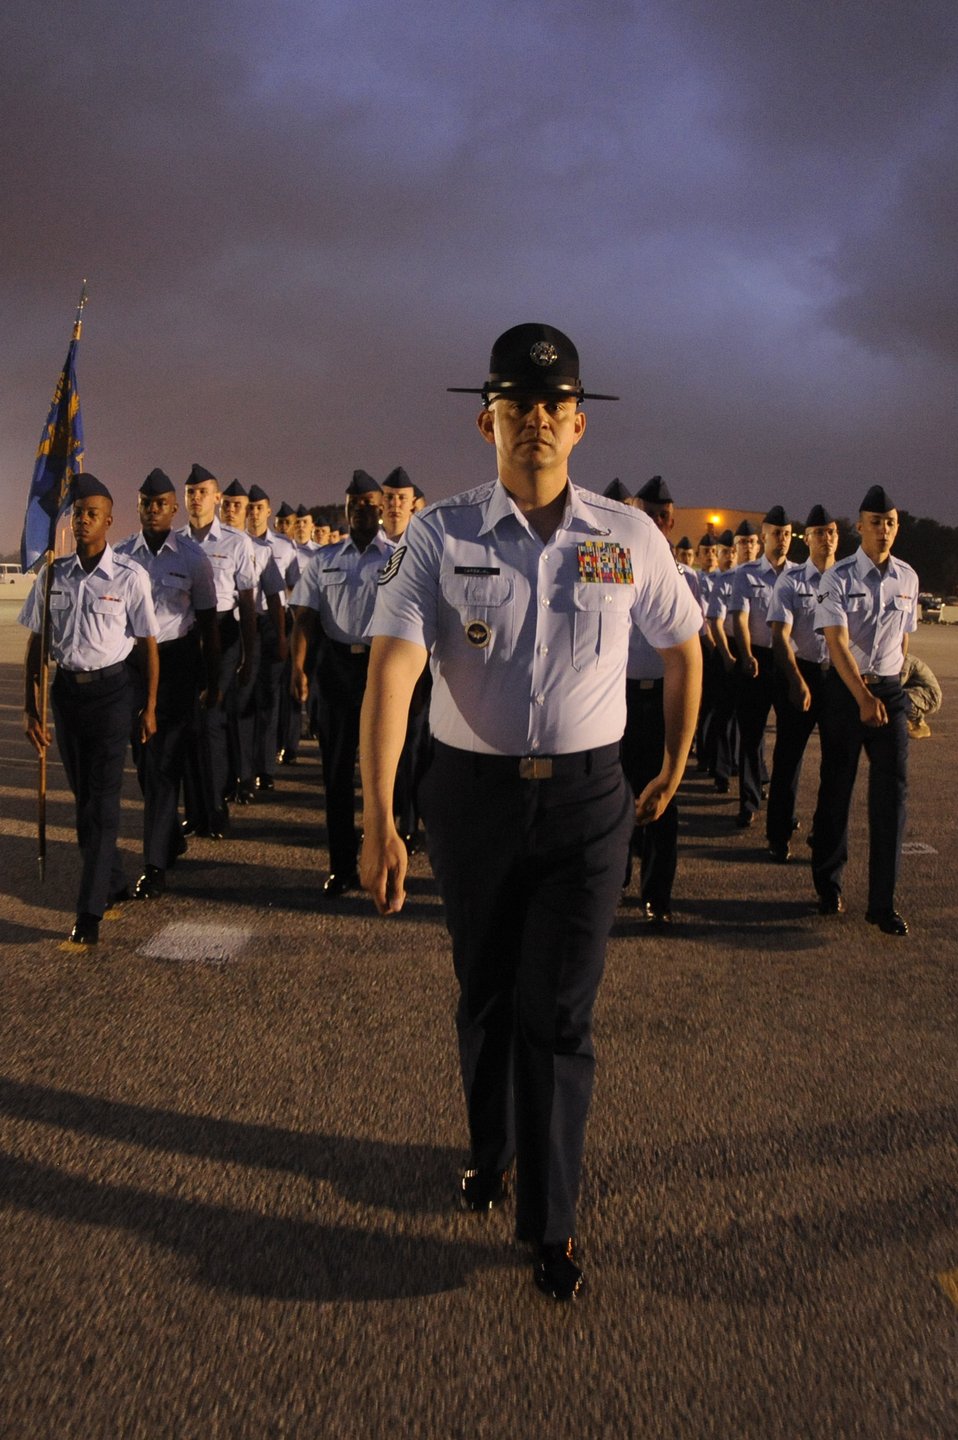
From basic trainee to Airman

Tech. Sgt. Carlos Carbajal marches his flight of basic trainees toward the parade ground at Lackland Air Force Base, Texas, April 24 for their graduation ceremony. Sergeant Carbajal is a military training instructor assigned to the 324th Training Squadron.